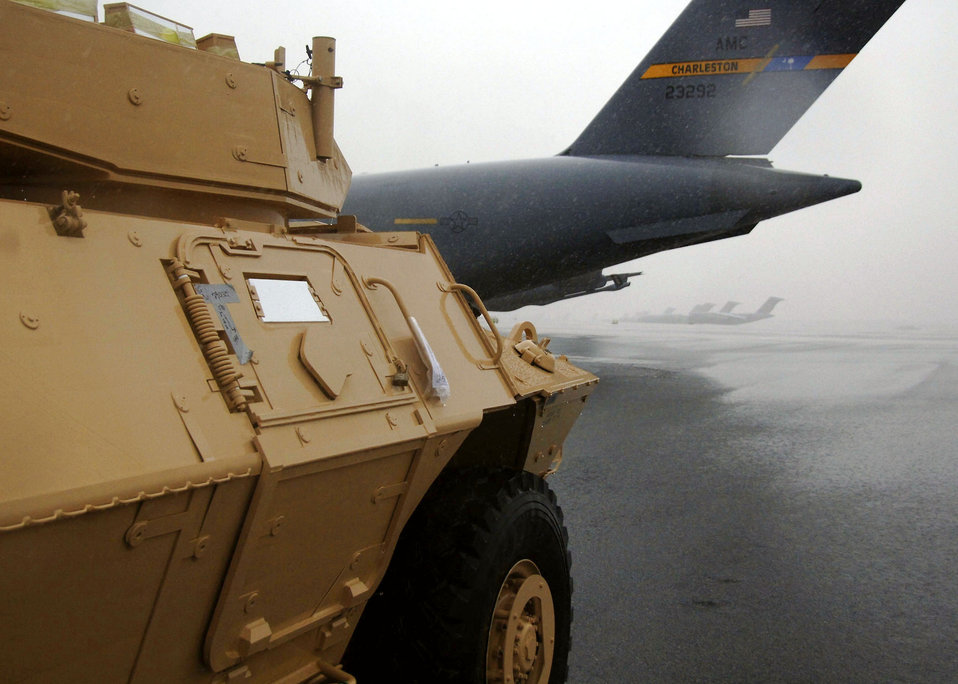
Charleston officials ship vehicles to support warfighters

An armored security vehicle awaits to be loaded onto a C-17 Globemaster III Oct. 24 at Charleston Air Force Base, S.C. Charleston AFB officials airlifted 82 ASVs by C-17s and other Air Force aircraft to assist Soldiers in forward deployed locations.